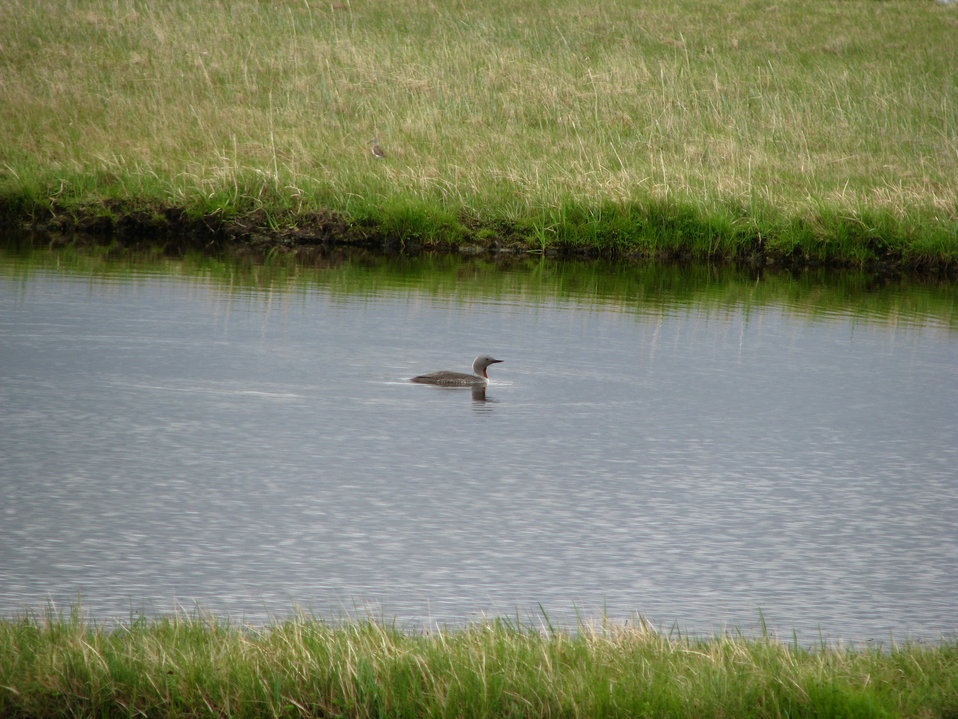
Red-throated loon

Yukon Delta NWR